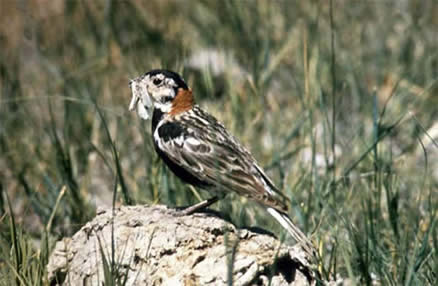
Chestnut-collared longspur on Bowdoin NWR